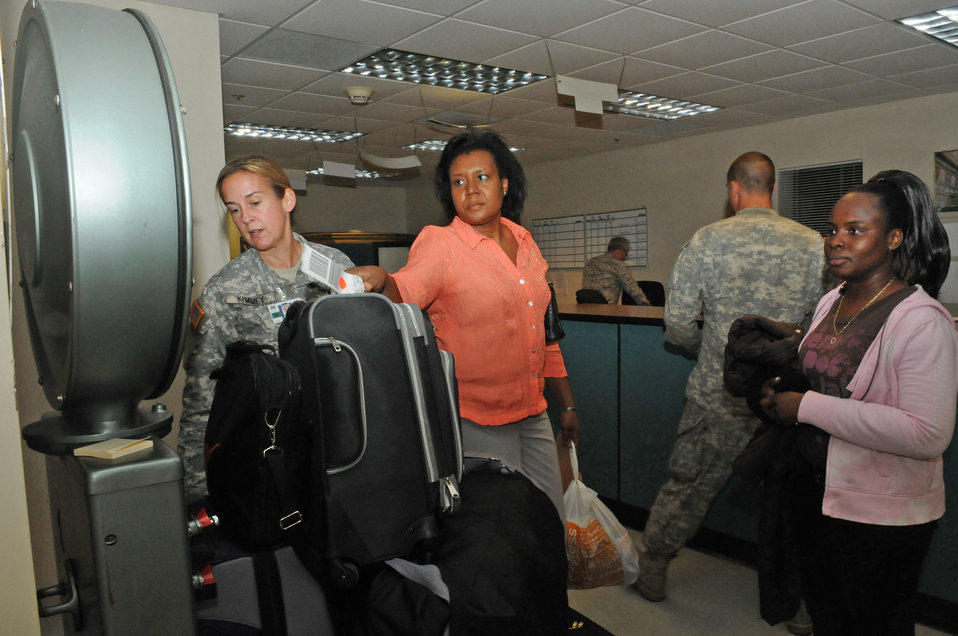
U.S. military helps Haitian students return home

Nadia Jean-Lois (center) of the Haitian coast guard, weighs her baggage for her flight to Haiti in support of Operation Unified Response Jan. 23, 2010, at Homestead Air Reserve Base, Fla. The return flight home left Homestead ARB Jan. 24.